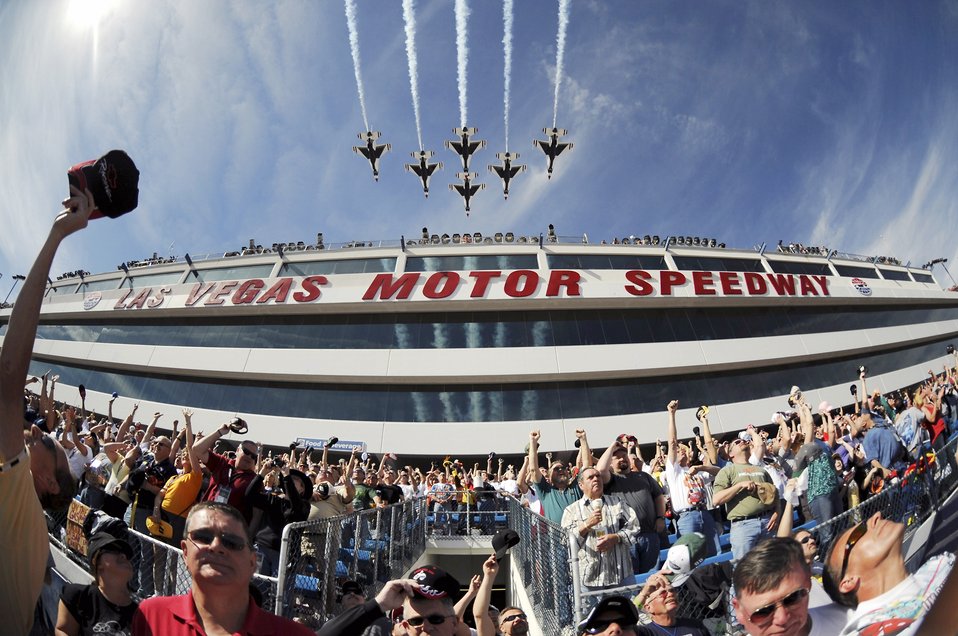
Taking a victory lap

The U.S. Air Force Air Demonstration Squadron Thunderbirds fly over the Las Vegas Motor Speedway March 1, 2009, during the NASCAR Nextel Cup race. The Thunderbird team is located at Nellis Air Force Base, Nev.